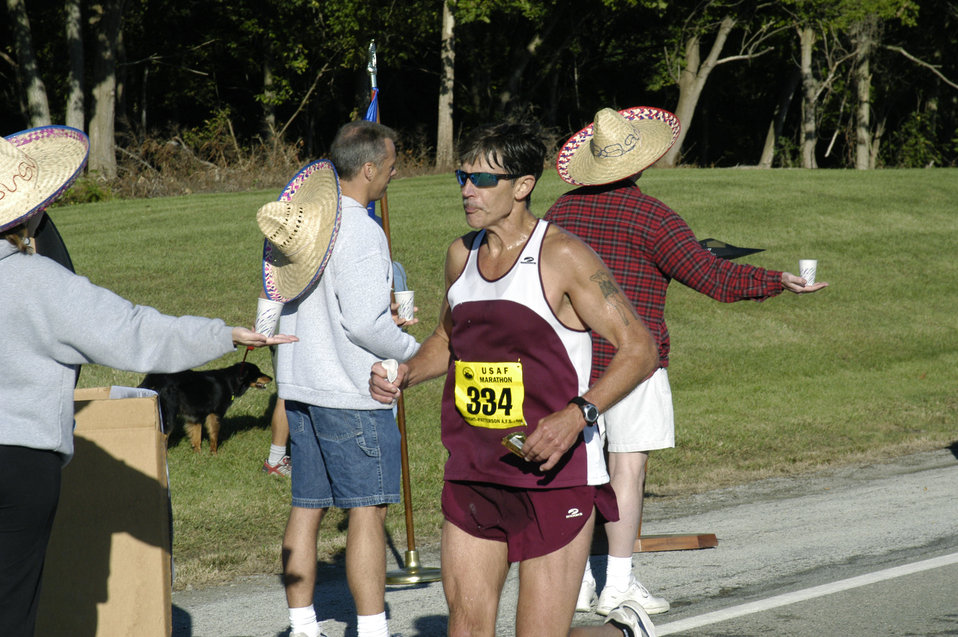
AF officials announce marathon results

WRIGHT-PATTERSON AIR FORCE BASE, Ohio -- Daniel Ponder gets some water from the 19.5-mile refreshment station during his full marathon run at the 8th annual official Air Force Marathon here Sept. 18. The refreshment stations were about every mile along the course and each organized with a theme. Mr. Ponder is from Tinker Air Force Base, Okla.